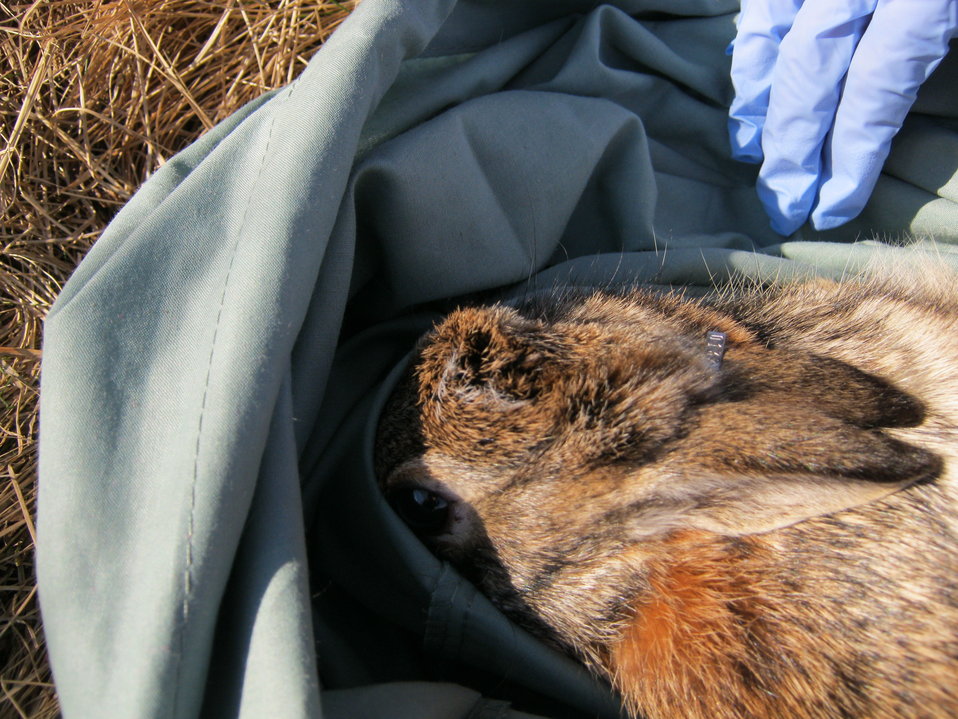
Finding New England cottontails

A close-up of the cottontail that will help identify if this area is home to eastern or New England cottontails. That information will help us protect the New England cottontail, a candidate for protection under the Endangered Species Act.